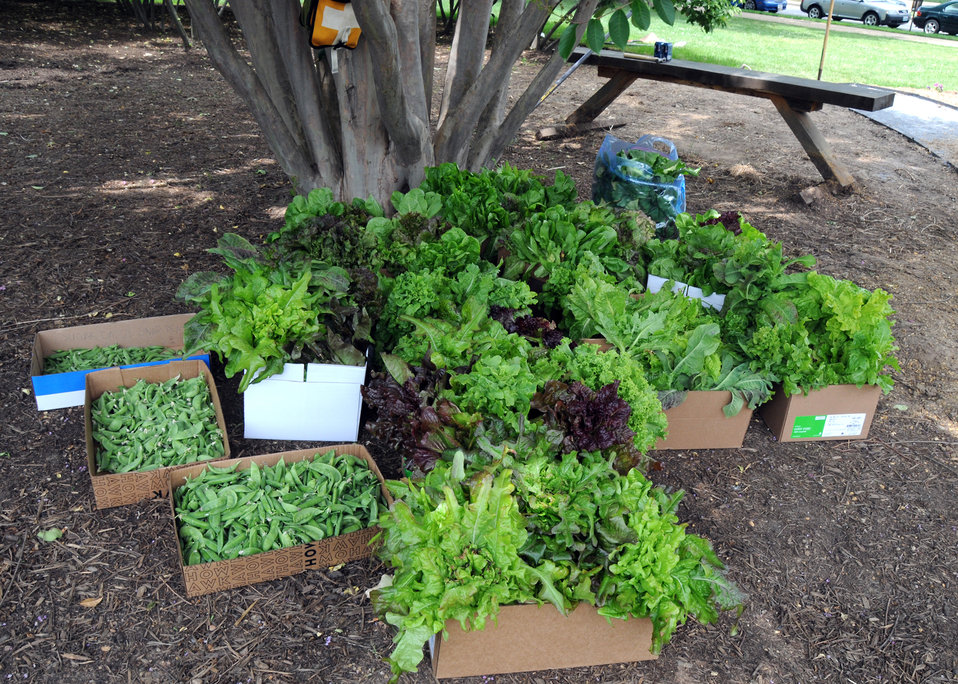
Ready for delivery to local area food banks, are the crops from the first harvest of vegetables from US Department of Agriculture’s People’s Garden in Washington, DC, on Friday, May 28, 2010 USDA photo 10di1384-116.